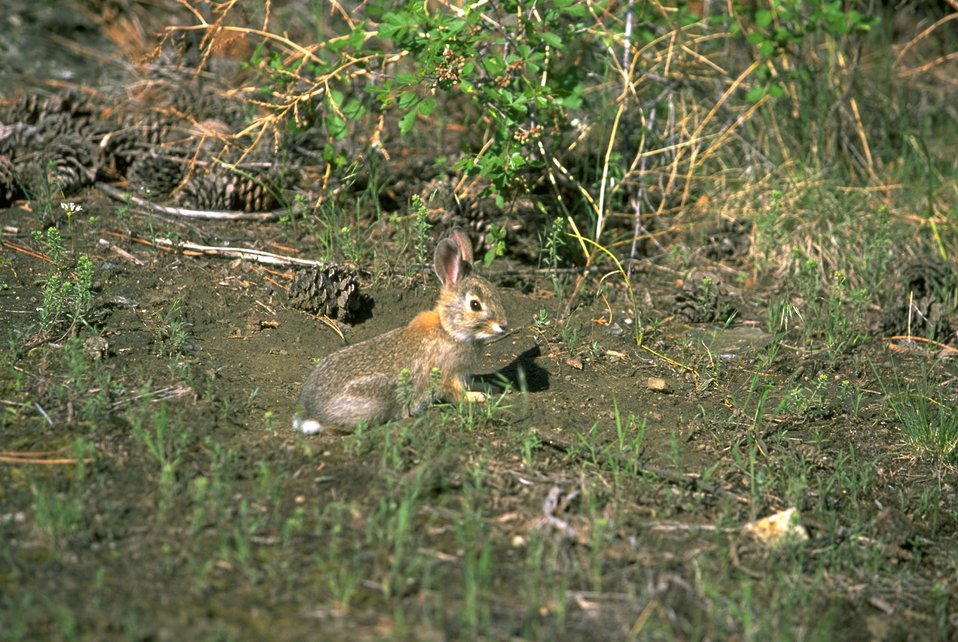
Cottontail rabbit in the Four Dances Natural Area